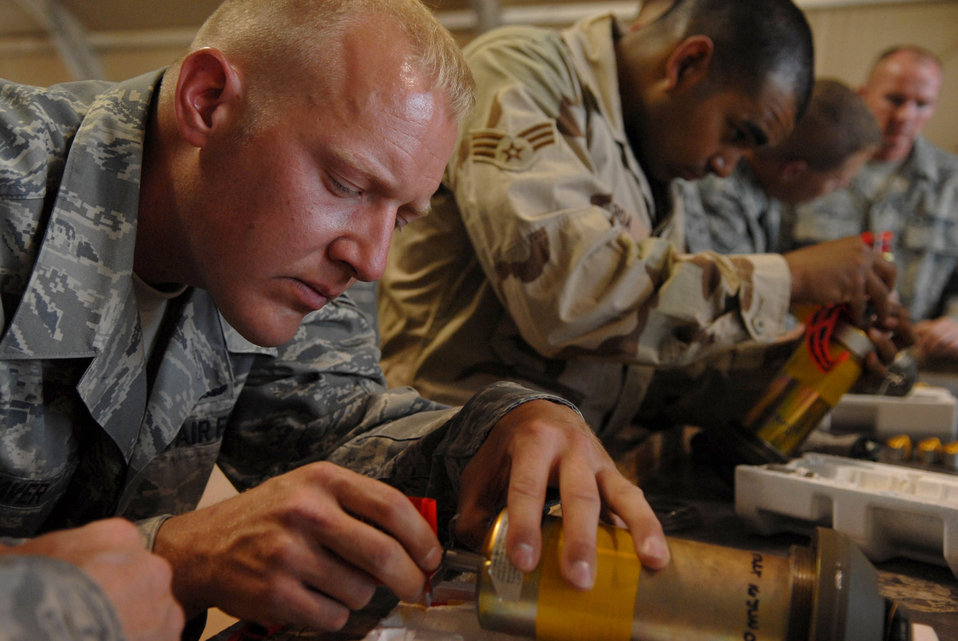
Some assembly required

Staff Sgt. Dan Weaver pieces together a fuse for a guided bomb unit-12 June 16 at Joint Base Balad, Iraq. The team is responsible for building, maintaining and storing various munitions to support Operation Iraqi Freedom kinetic strikes. The fuse and its components detonate the munition and increase the force of the explosion; the GBU-12 can self-guide to a target pinpointed by a laser designator, which helps to minimize collateral damage resulting from detonation. Sergeant Weaver is a 332nd Expeditionary Maintenance Squadron munitions systems specialist deployed from Dover Air Force Base, Del.